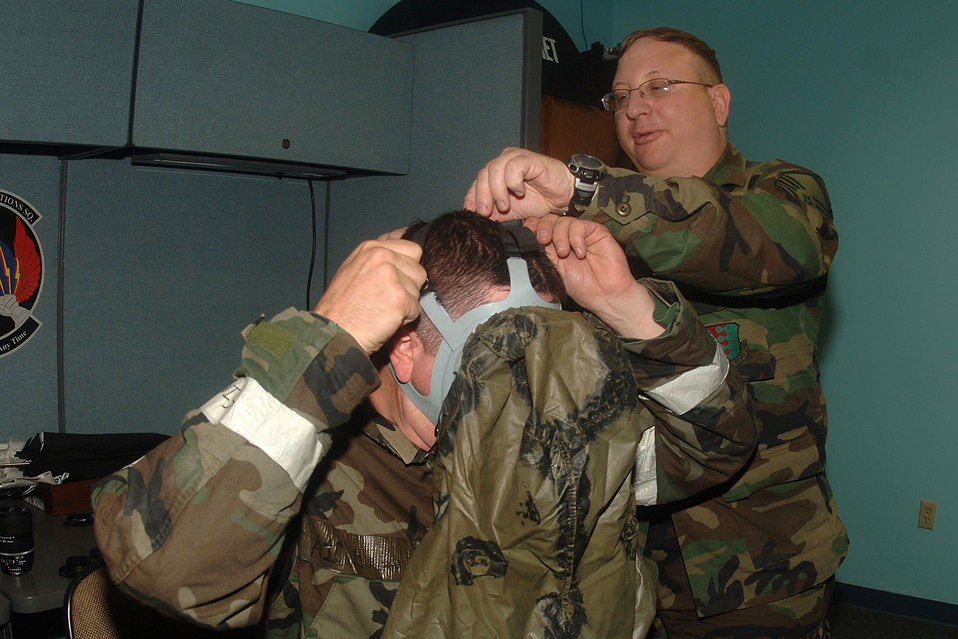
Chemical gear

Airman 1st Class Kristopher Kingan puts on his chemical mask with help from Master Sgt. Frank Martin at Ellsworth Air Force Base, S.D., on July 10. Base members are preparing for an operational readiness inspection.